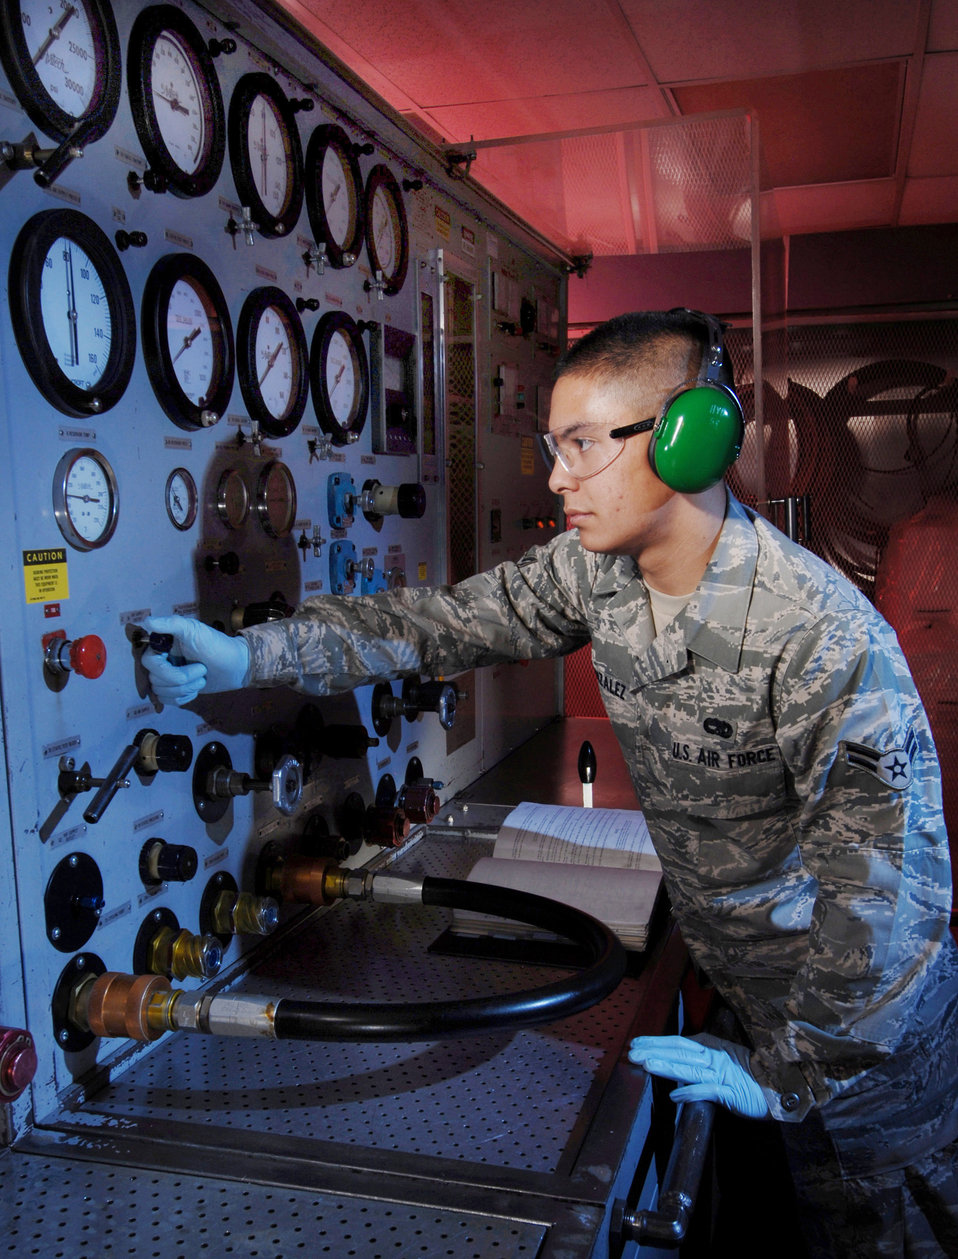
Applying some pressure

Airman 1st Class Chris Gonzalez checks the fluid flow on a hydraulic test stand June 30 during a maintenance check at March Air Reserve Base, Calif. The stand is used for bench-checking hydraulic and pneumatic components. Airman Gonzalez is with the 452nd Maintenance Squadron's aircraft pneudraulics systems shop,